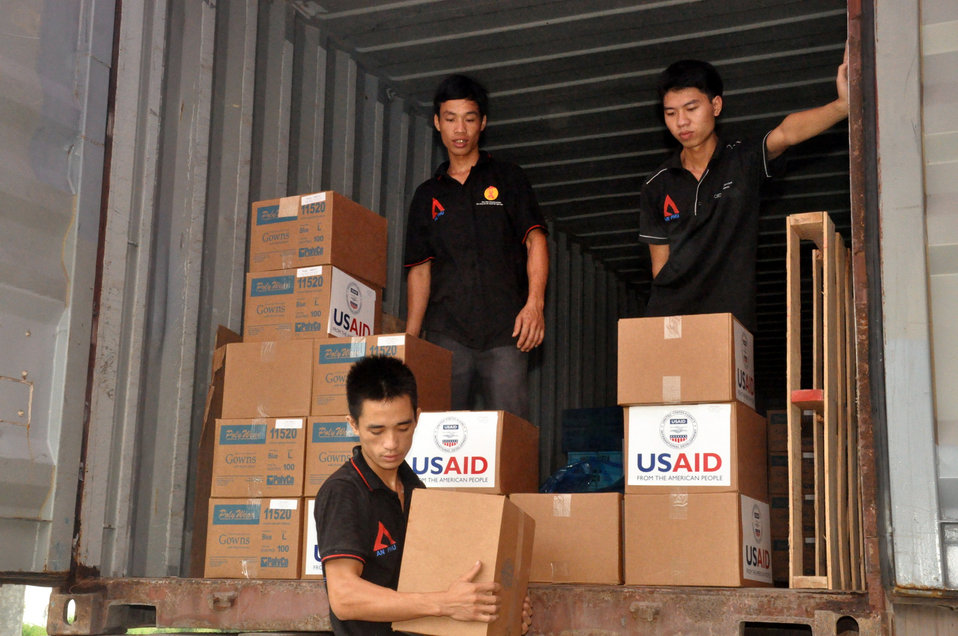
U.S. Provides Protective Gear to Help Prevent Disease Outbreaks